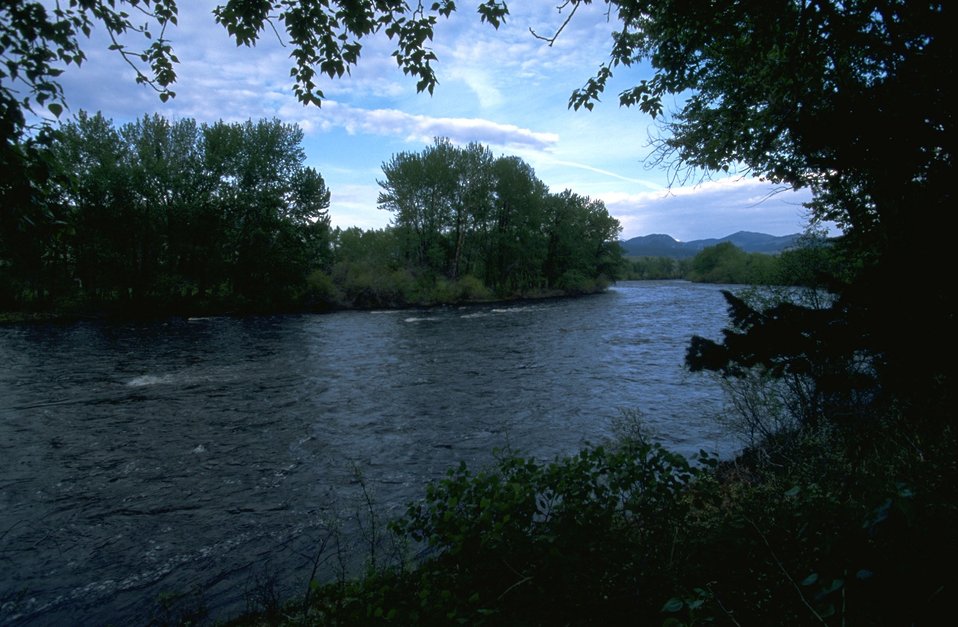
The Big Hole River framed in a silhouette of foliage